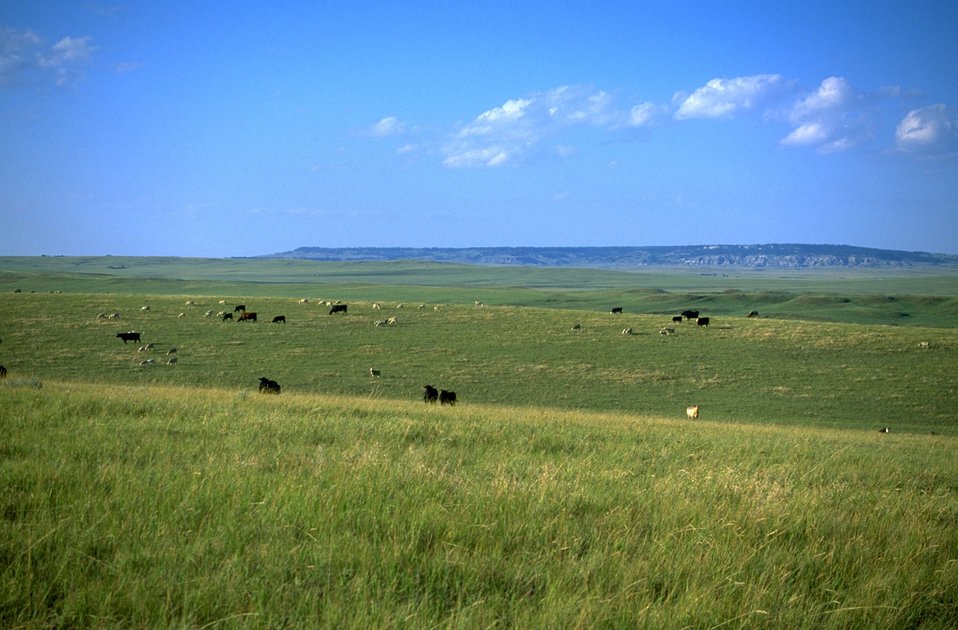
Grassland with Cattle Grazing